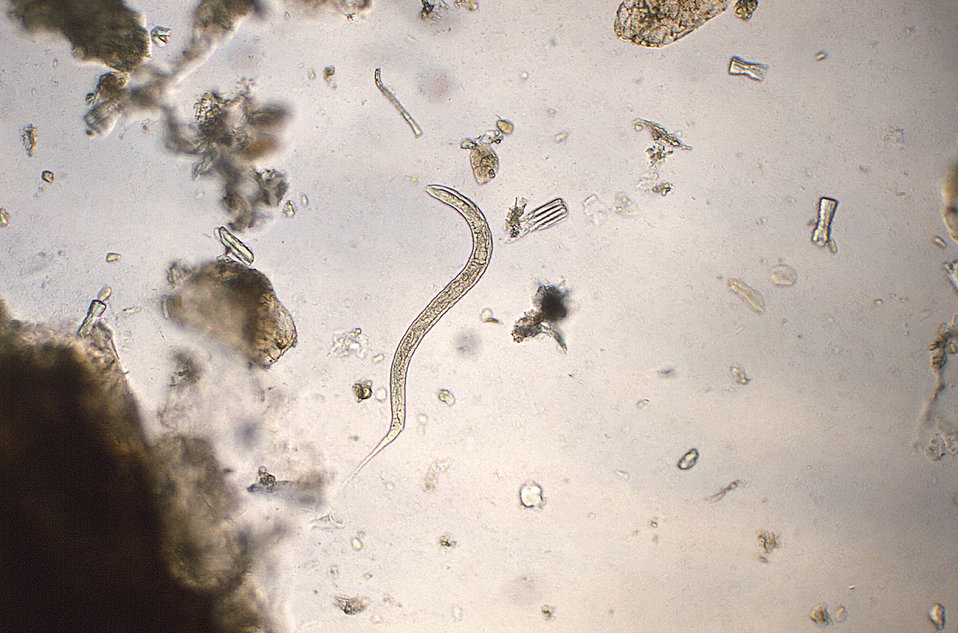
Under a magnification of 128X, this photomicrograph revealed some of the morphologic ultrastructure of a hookworm rhabditiform larva. Rhabditiform (L1) larvae that hatch from eggs are 250-300�m long, and approximately 15-20�m wide. They have a long buccal canal, and an inconspicuous genital primordium. Rhabditiform larvae are usually not found in stool, but may be found there is a delay in processing the stool specimen. If larvae are seen in stool, they must be differentiated from the L1 larvae of Stronyloides stercoralis.